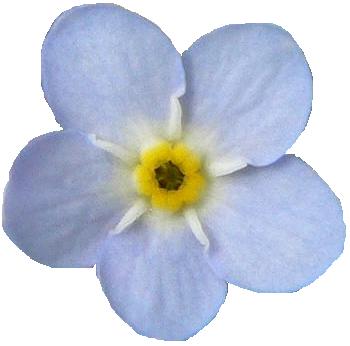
This picture depicts the head of a forget-me-not; the inner seed is yellow, and the outside petals are a gorgeous periwinkle blue. The forget-me-not is most certainly one of the most beautiful flowers around, and it's story is both moving and tragic.